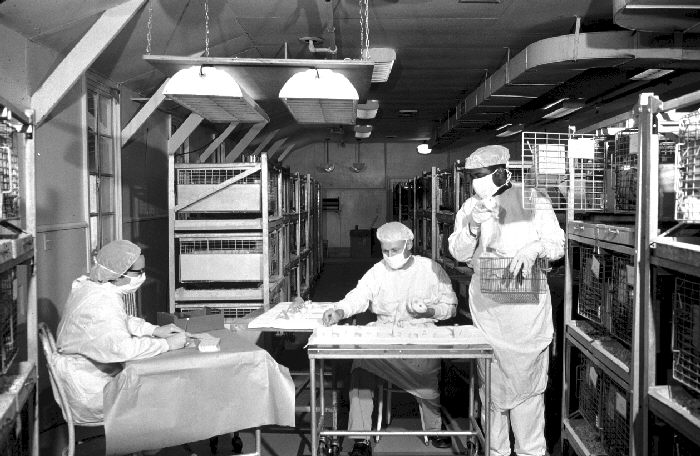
CDC Laboratory Technicians